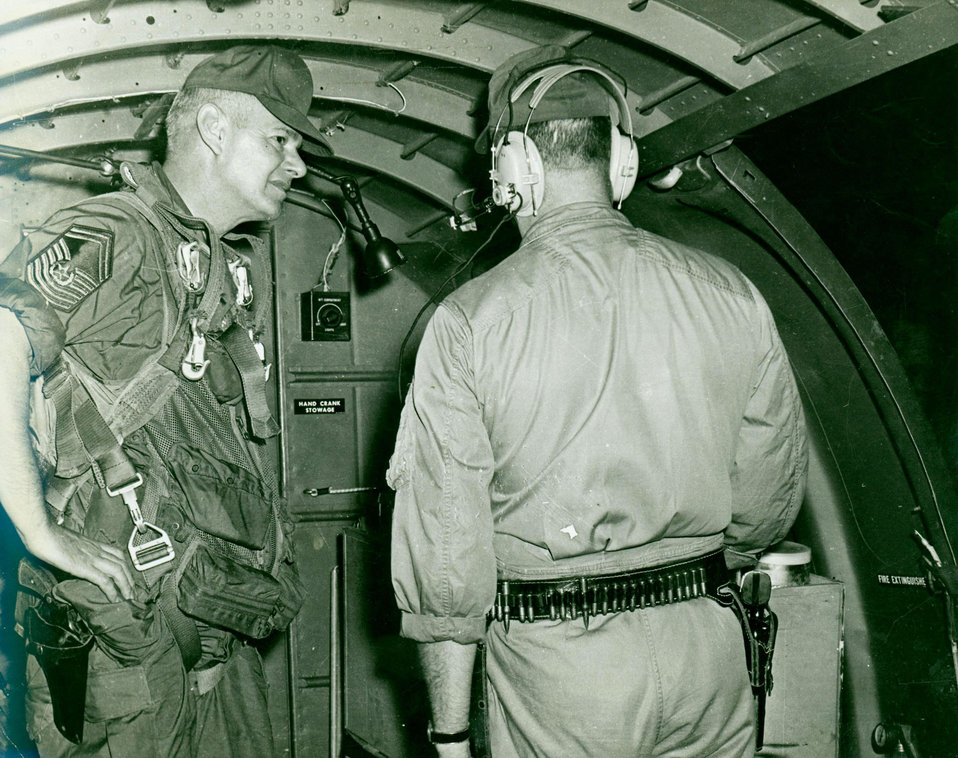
Enlisted perspective remembers the 'first'

Chief Master Sgt. Paul Airey was selected as the first chief master sergeant of the Air Force on April 3, 1967. During his tenure he visited many bases and talked with many Airmen about improving conditions for the enlisted force.